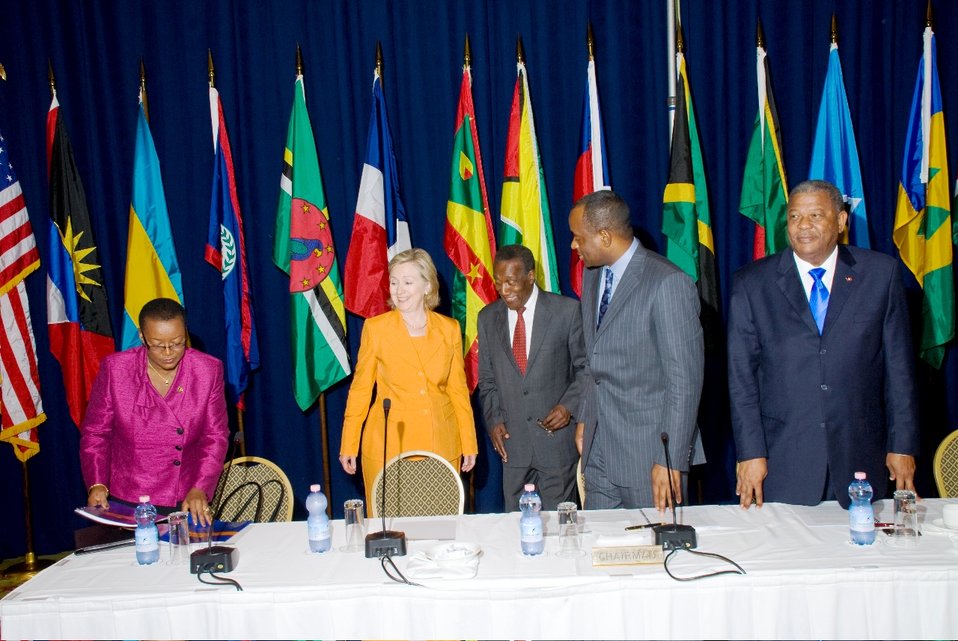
Secretary Clinton Attends CARICOM Ministerial Meeting

U.S. Secretary of State Hillary Rodham Clinton attends a CARICOM ministerial meeting in Bridgetown, Barbados, on June 10, 2010.